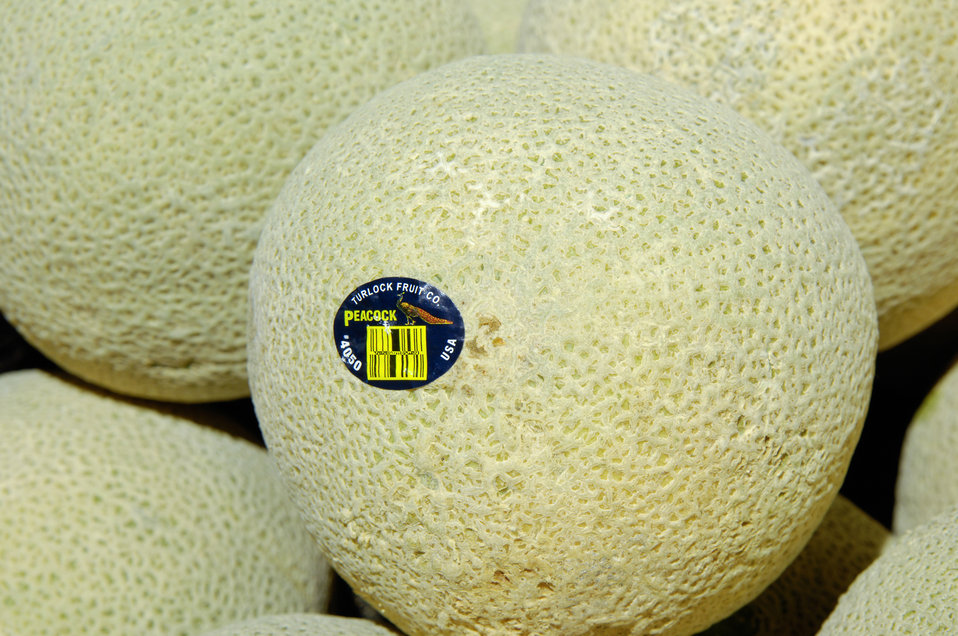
Cantalope sold at Wegman’s Supermarket in Fredericksburg, Virginia on September 1, 2009 displays the required Country of Origin Label (COOL). COOL is a labeling law that requires retailer, such as full-line grocery stores, supermarkets, and club warehouse stores to notify their customers with information regarding the source of certain foods. Food products and covered commodities contained in the law include muscle cut and ground meats of beef, veal, pork, lamb, goat, and chicken; wild and farm-raised fish and shellfish; fresh and frozen fruits and vegetables; peanuts, pecans, and macadamia nuts; and ginseng. The U.S. Department of Agriculture (USDA) Agricultural Marketing Service (AMS) is responsible for the administration and enforcement of COOL.